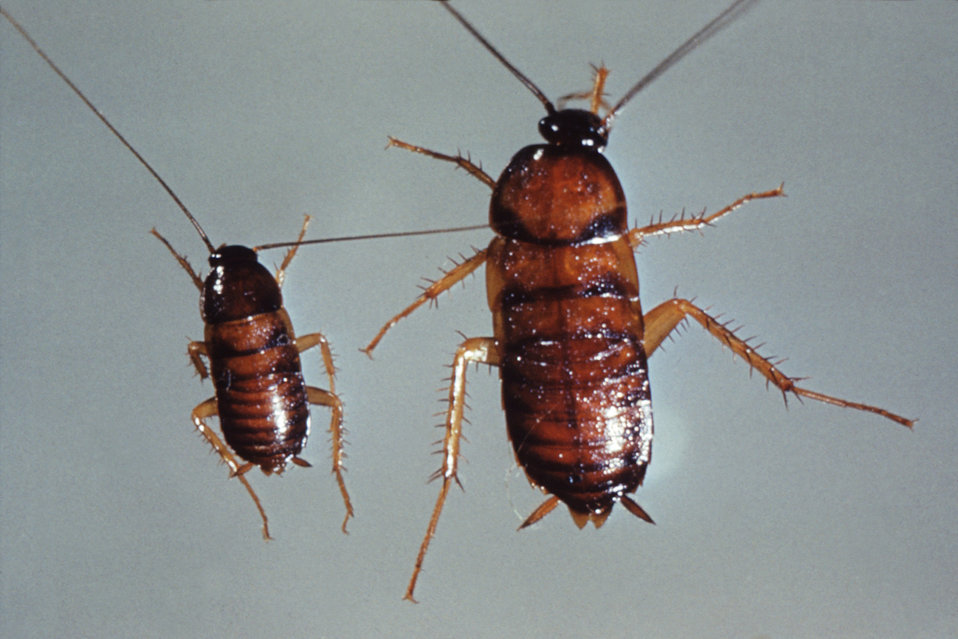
This photograph of two nymph cockroaches was taken during a 1972 study of disease carriers, and pests of migrant labor camps.